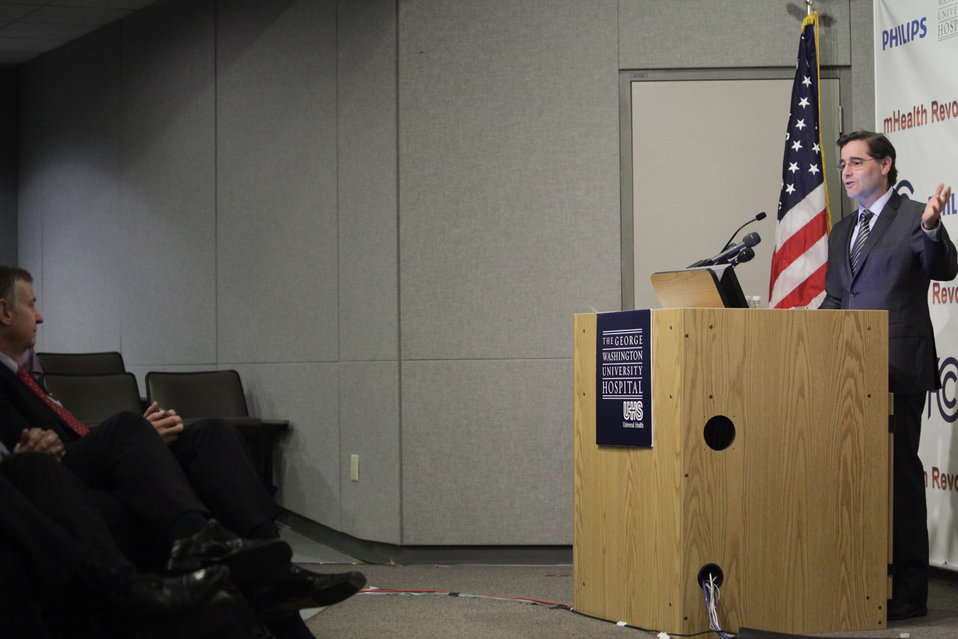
FCC Chairman Genachowski Speaks at GW University Hospital About MBANs to Medical Industry

FCC Chairman Genachowski speak about MBANs to Medical Industry at George Washington University Hospital in Washington, DC.

May 17, 2012.